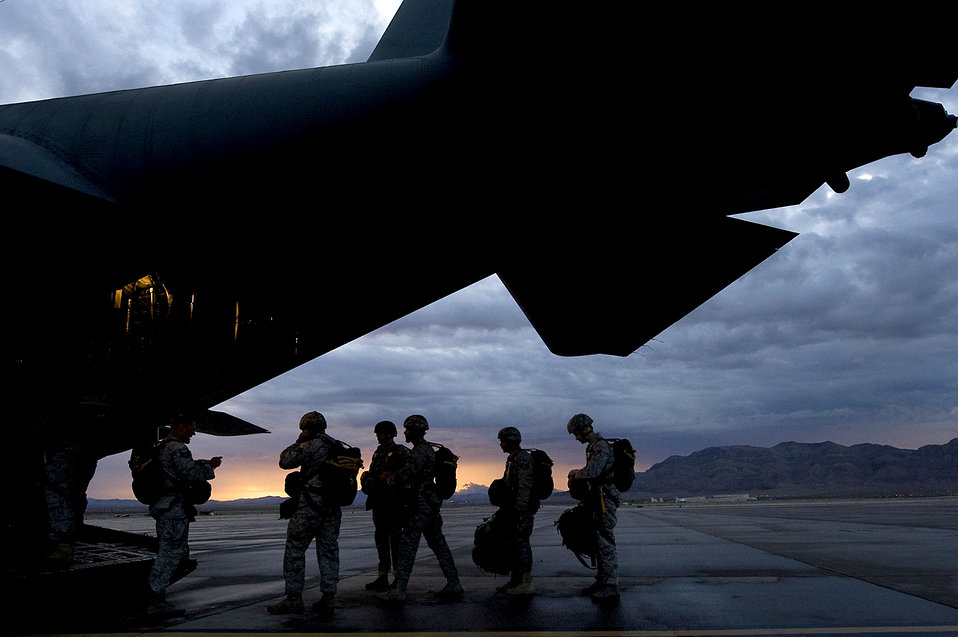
Airdrop training

Airmen from the 820th RED HORSE airborne flight and 6th Combat Training Squadron board a C-130 Hercules during a training mission Oct. 4, 2011, at Nellis Air Force Base, Nev. RED HORSE and 6th CTS Airmen perform airdrop missions to stay current on training and certifications, enabling them to perform jump missions and operate their own drop zones.